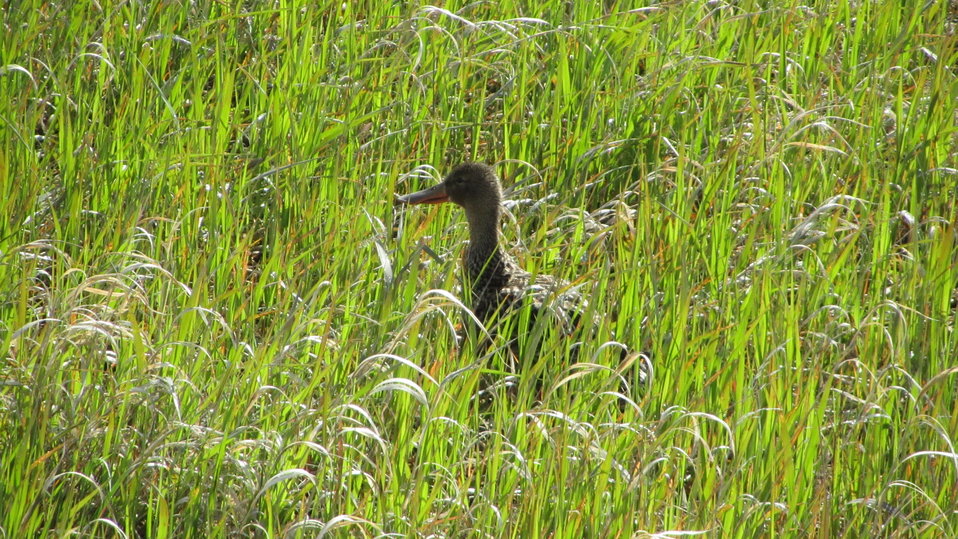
Northern Shoveler Hen

The lands of the refuge were established to protect and provide habitat for migratory birds that cross State lines and international borders and are by law a Federal trust responsibility.
The refuge is of great value to waterfowl and shorebirds, as well as other migrating water-dependent bird species, because of the diversity of wetland and upland habitats that provide for the diverse life cycle needs of these species.